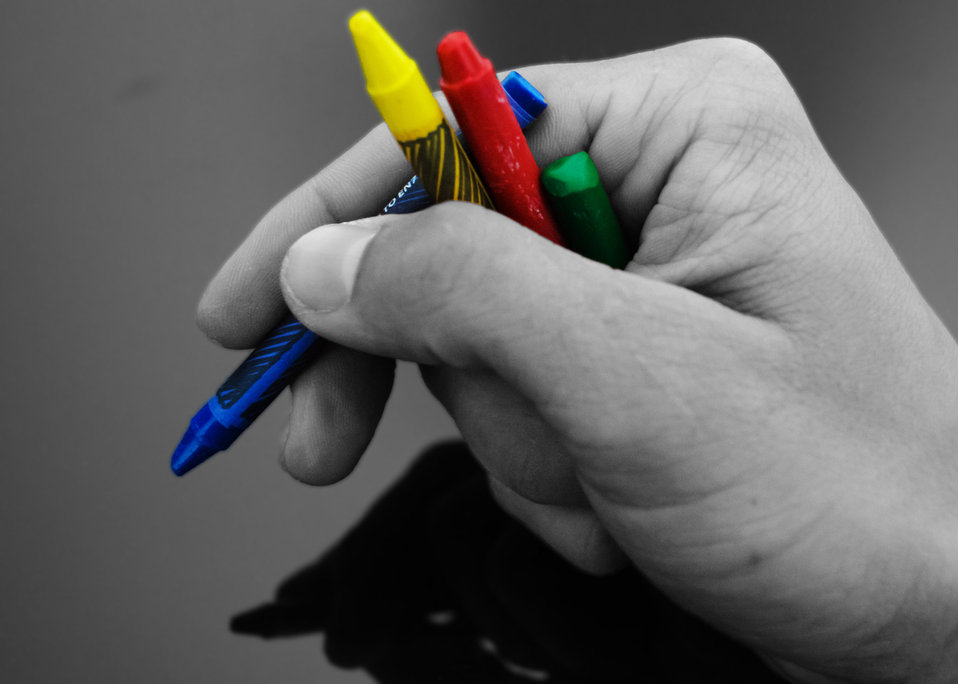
Wax crayons.